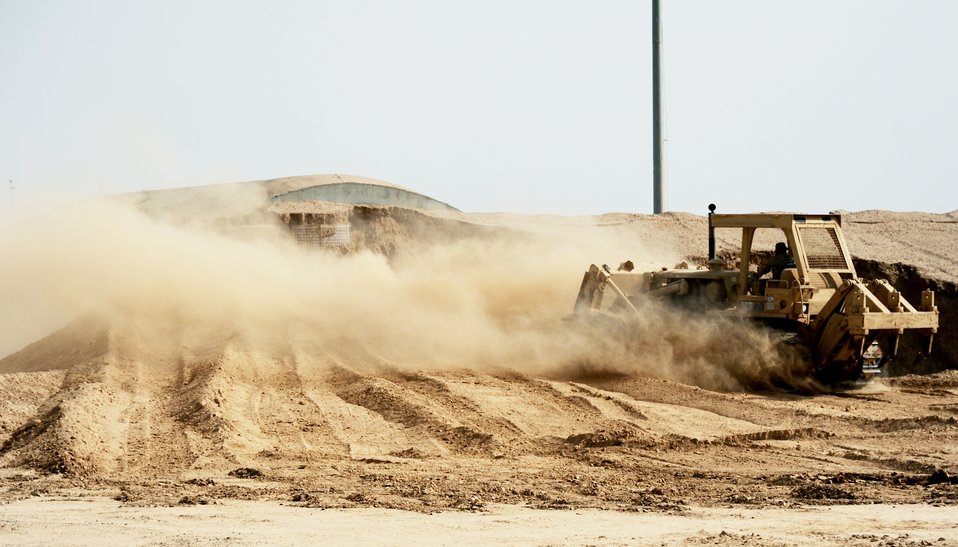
Airmen build up reconstruction yard for drawdown

An Airman stockpiles dirt with a bulldozer during construction of a new container repair yard Nov. 2, 2009, at Joint Base Balad, Iraq. By using containers repaired here instead of purchasing new ones, the projected savings total more than $100 million as military assets withdraw from Iraq. The Airman is from the 732nd Expeditionary Civil Engineer Squadron.